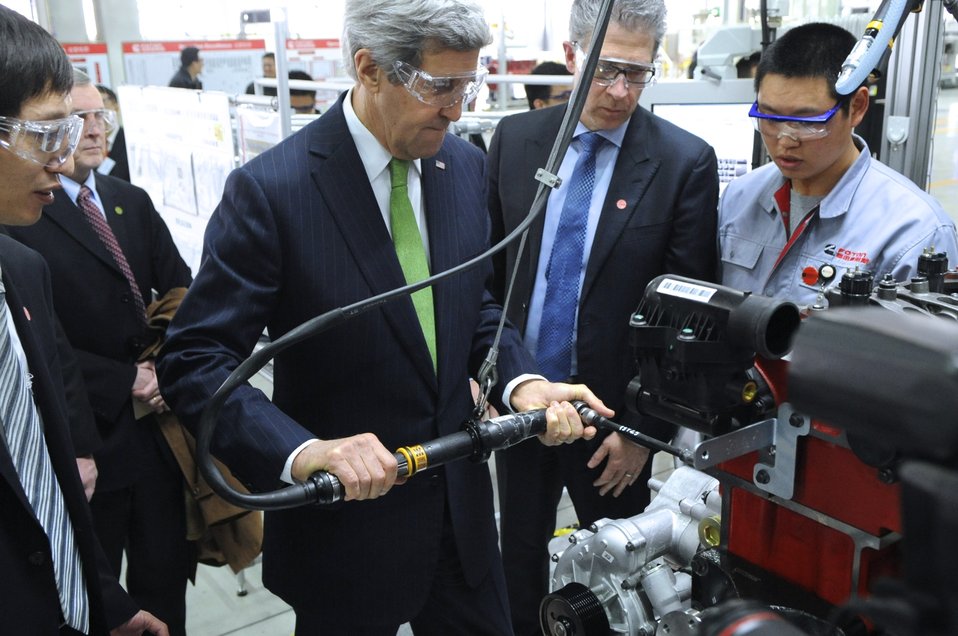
Secretary Kerry Adds Part to Clean-Diesel Engine

U.S. Secretary of State John Kerry adds a bolt to a clean-diesel engine while touring the Cummins-Foton Joint Venture Plant in Beijing, China on February 15, 2014.